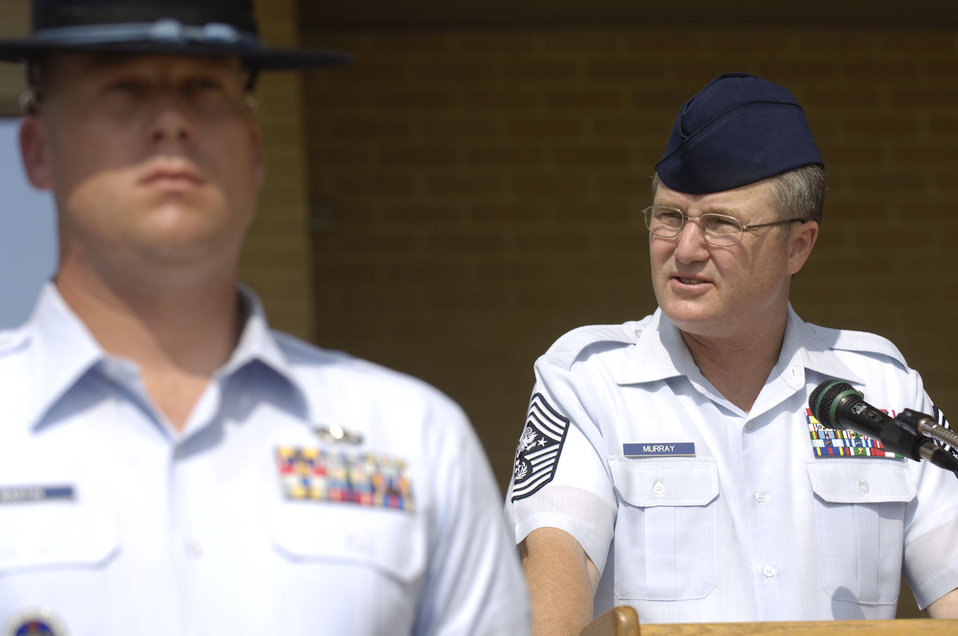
Lackland honors nine enlisted heroes

Chief Master Sergeant of the Air Force Gerald R. Murray speaks during a Basic Military Training Memorialization Ceremony at Lackland Air Force Base, Texas, on Wednesday, June 14. Chief Murray and several hundred people witnessed the ceremony that dedicated nine training facilities in honor of nine enlisted heroes who have served from World War II to present-day operations in the war on terrorism. The ceremony was part of a three-day event to honor the 60th anniversary of basic military training.